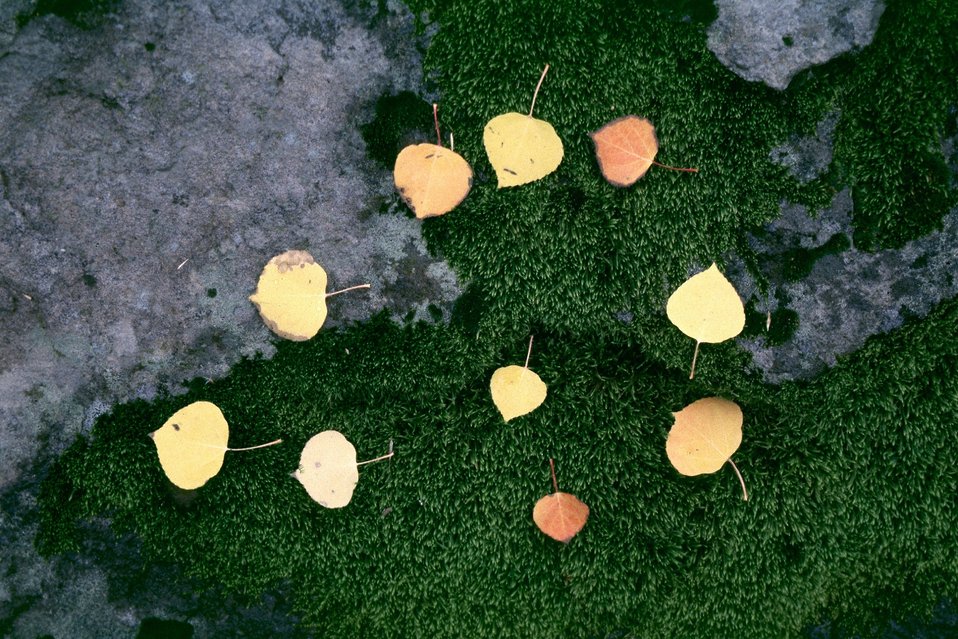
Aspen leaves at Fish Lake, Steen's Mountain.